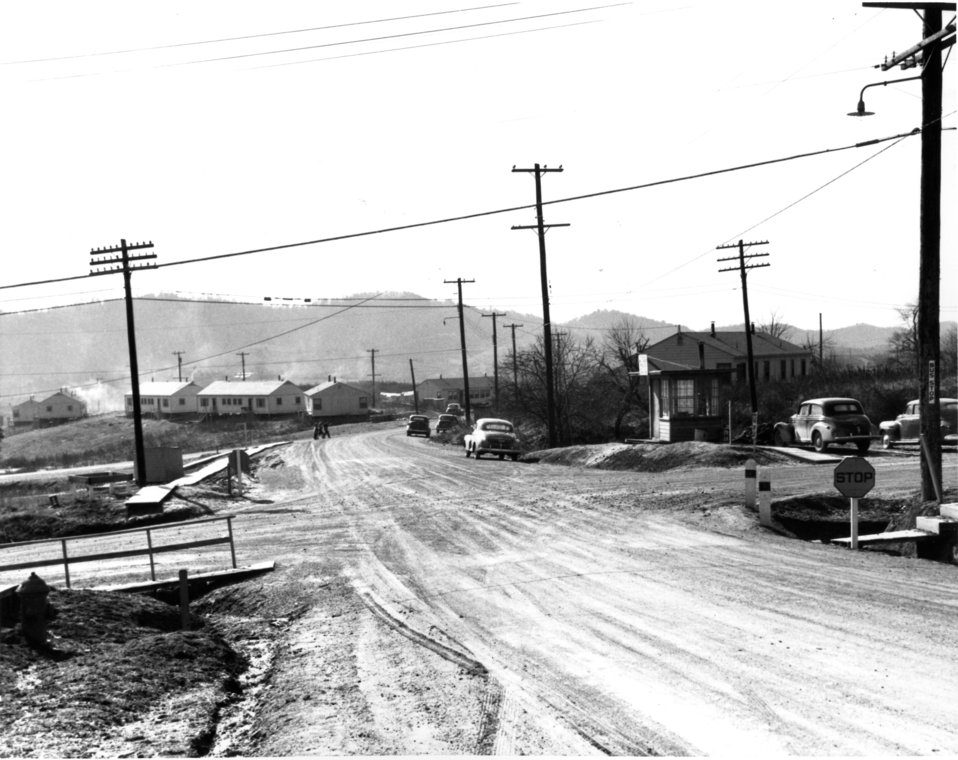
Recreation at Oak Ridge